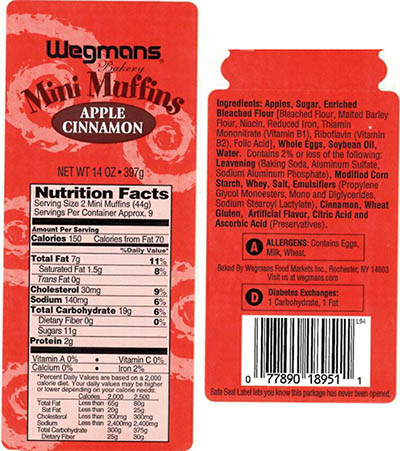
RECALLED – Apple Cinnamon Mini Muffins

September 19, 2013 – Product Recall – Wegmans Food Markets Issues Allergy Alert on Undeclared Soy (Allergen) in Wegmans Apple Cinnamon Mini Muffins, 14 oz.